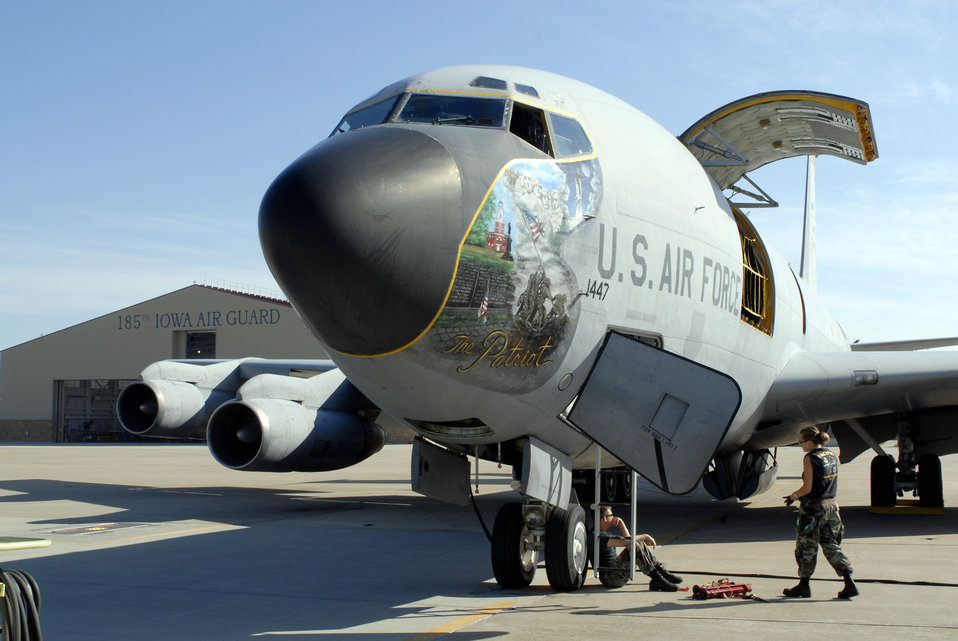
Iowa's KC-135E retires as 'snow bird' in Arizona

An Iowa Air National Guard's aging KC-135 Stratotanker, displaying patriotic nose art, is about to retire. The KC-135E assigned to the 185th Air Reserve Wing in Sioux City, Iowa, was flown out by a flight crew from Tinker Air Force Base, Okla., to Davis-Monthan AFB in Tucson, Ariz., where the aircraft will most likely be retired. The 185th ARW is on track to convert to the newer KC-135 R model this year.